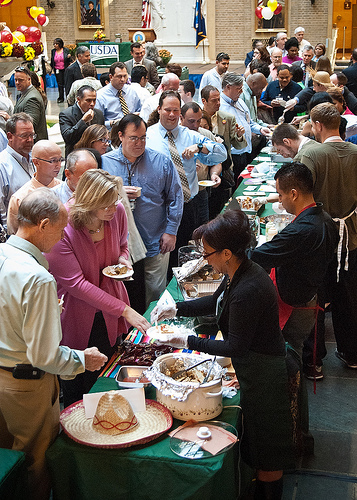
Sinceri Guerrero, Food Safety Inspection Service serves tamales to U. S. Department of Agriculture employees during the Second Annual Hispanic Heritage Food Fiesta to celebrate Hispanic Heritage Month at USDA in Washington, DC, on Thursday, October 6, 2011. Guerrero was one of the USDA employee chef volunteers along with Celebrity chefs who cooked Hispanic cuisine.